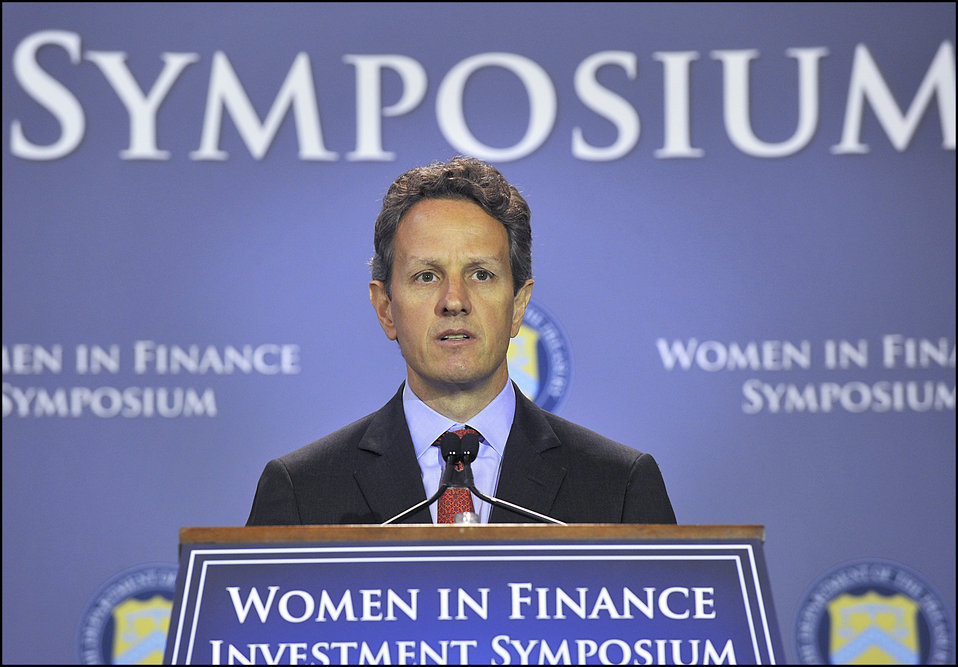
Women in Finance Investment Symposium

Secretary Geithner provided opening remarks to the Women in Finance Investment Symposium.